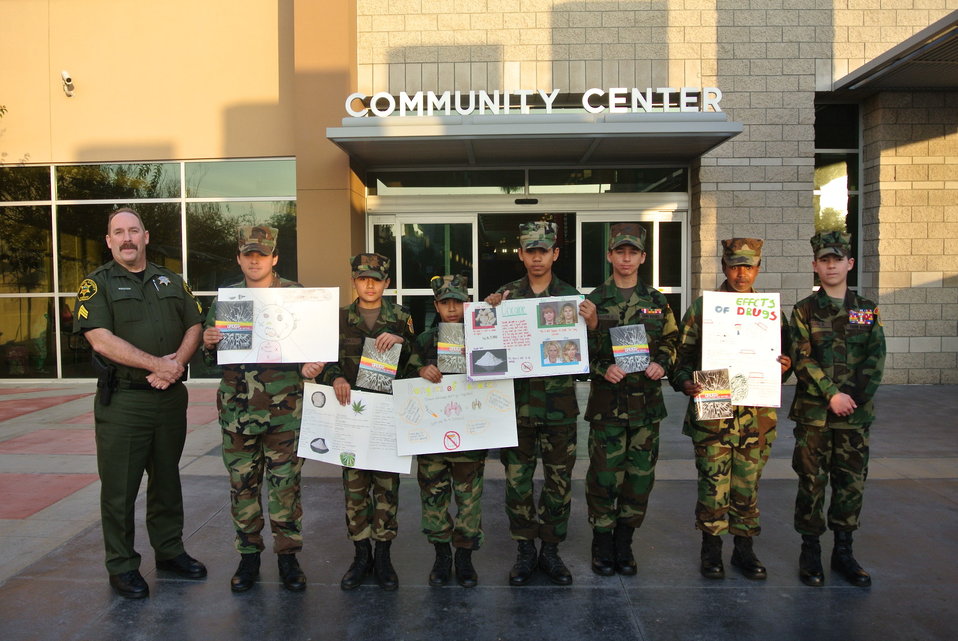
National Drug Fact Week at the Brea Community Center in Brea, California hosted by Tustin Young Marines.